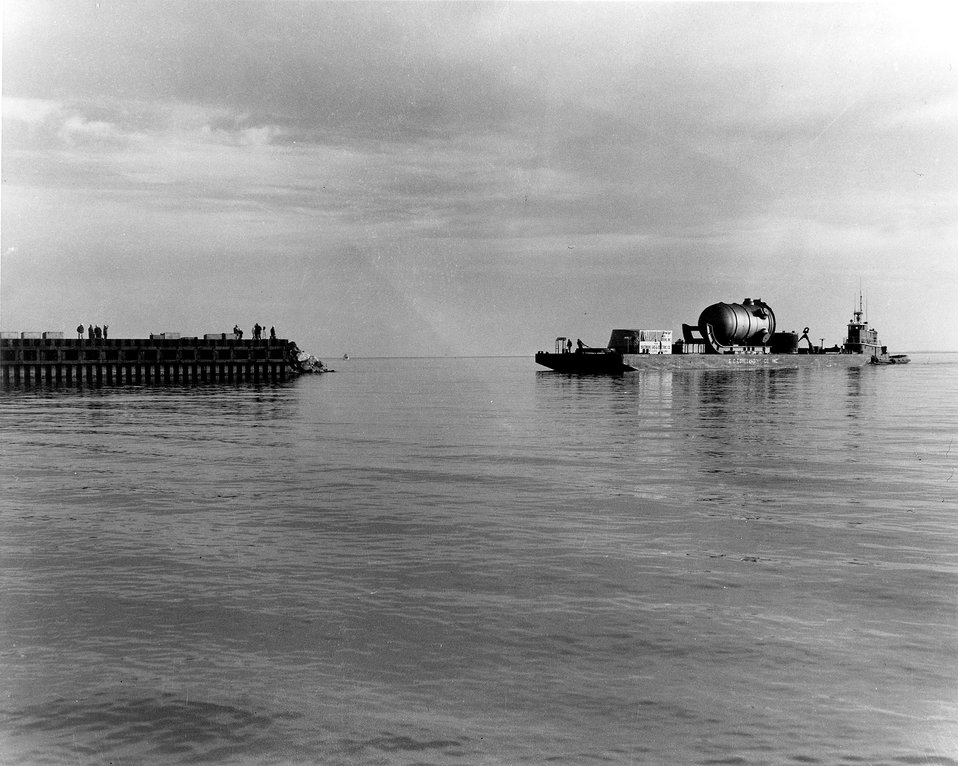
Arrival of the reactor vessel for the first unit at Baltimore Gas and Electric's Calvert Cliffs Nuclear Power Plant. Circa 1971.